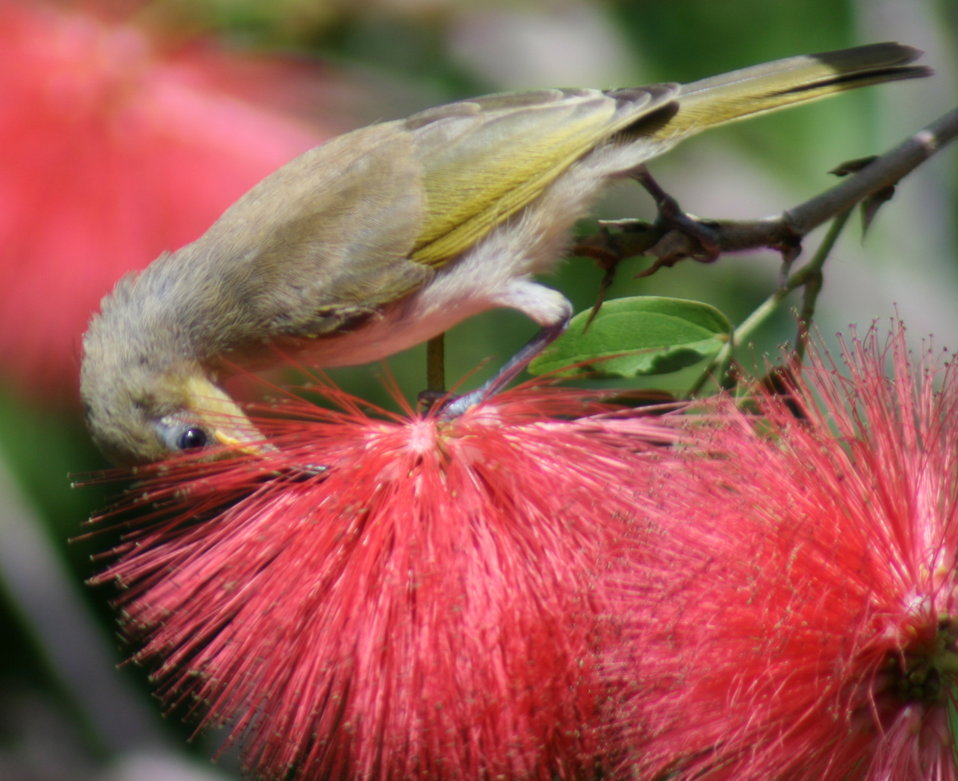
Yellow Honeyeater Lichenostomus flavus